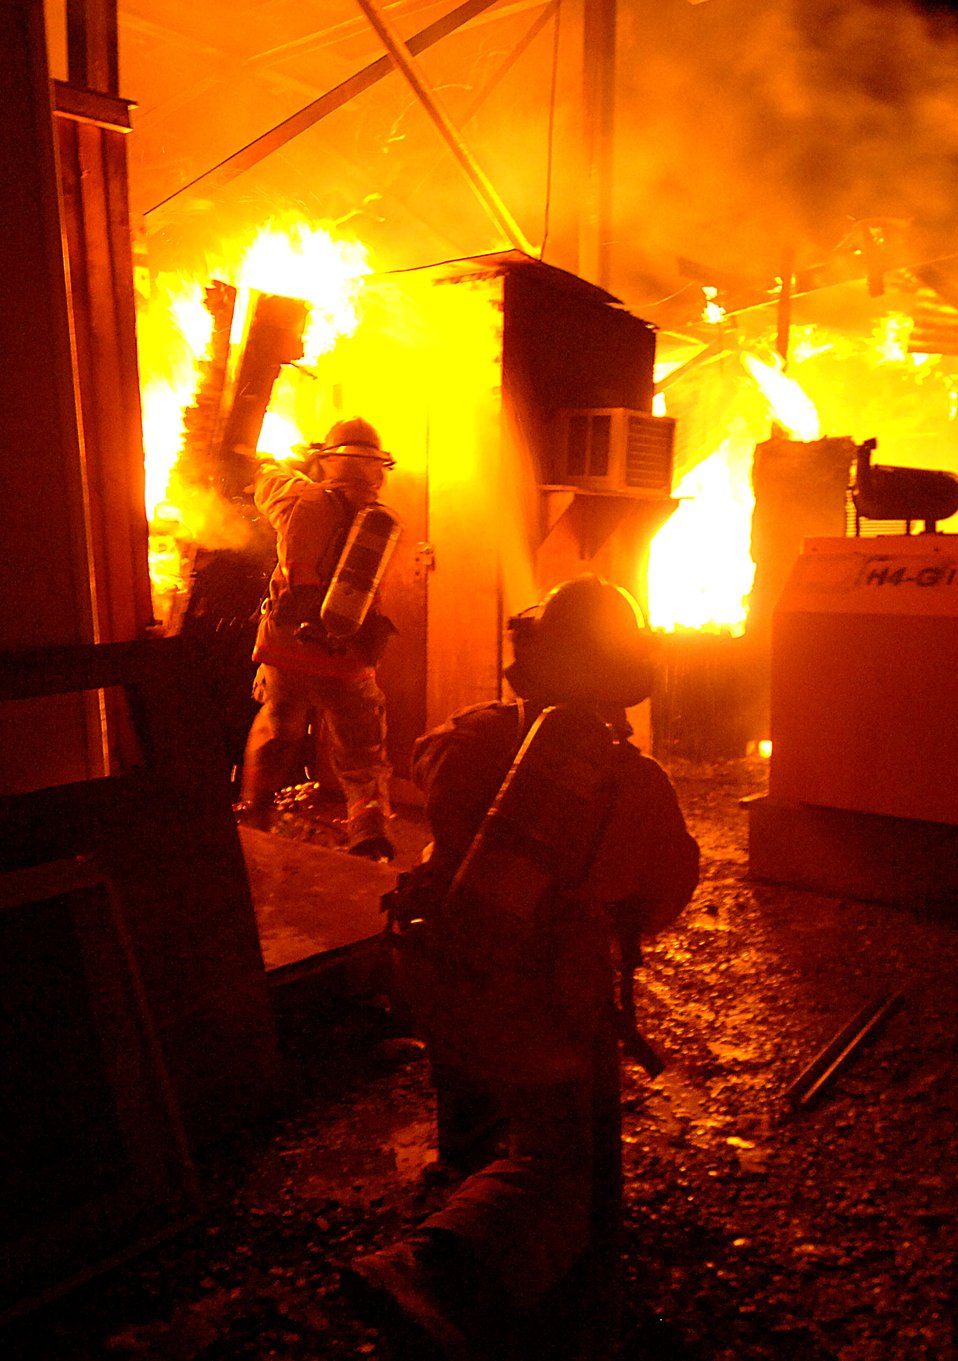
Firefighters battle blaze in Iraq

Firefighters from contractor Wackenhut Fire and Emergency Service battle a fire at Forward Operating Base Marez in Mosul, Iraq, on Thursday, June 8. The fire was at a local restaurant and jewelry store.